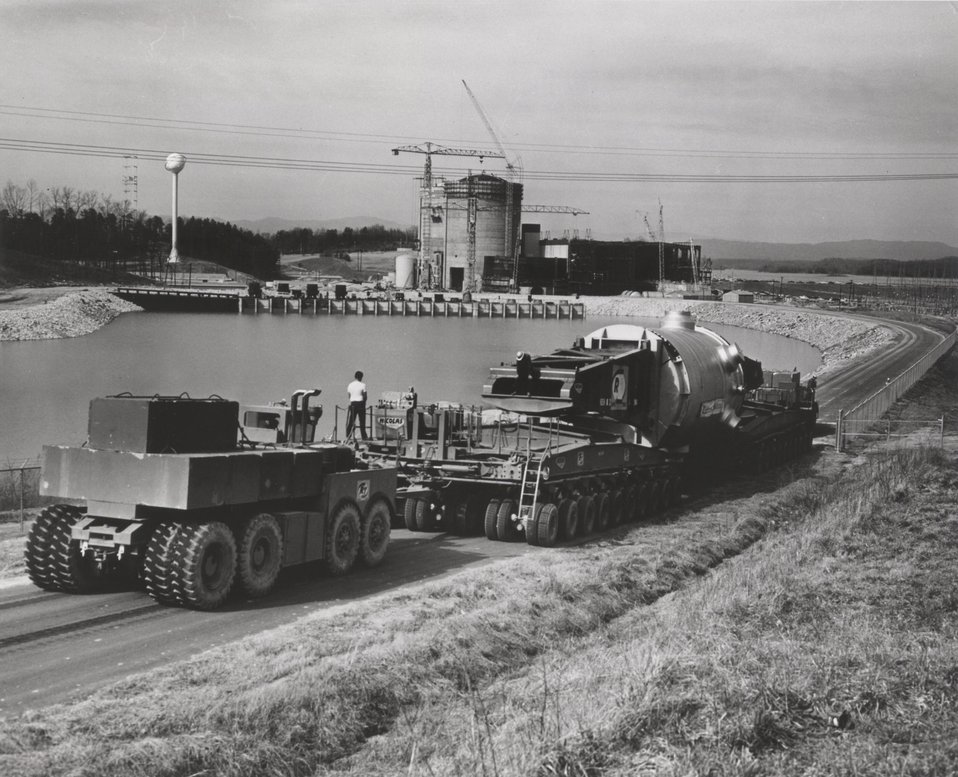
A nuclear reactor vessel arrives at the construction site of Duke Power's second unit of the Oconee Nuclear Generating Station near Seneca, South Carolina. Circa 1971.